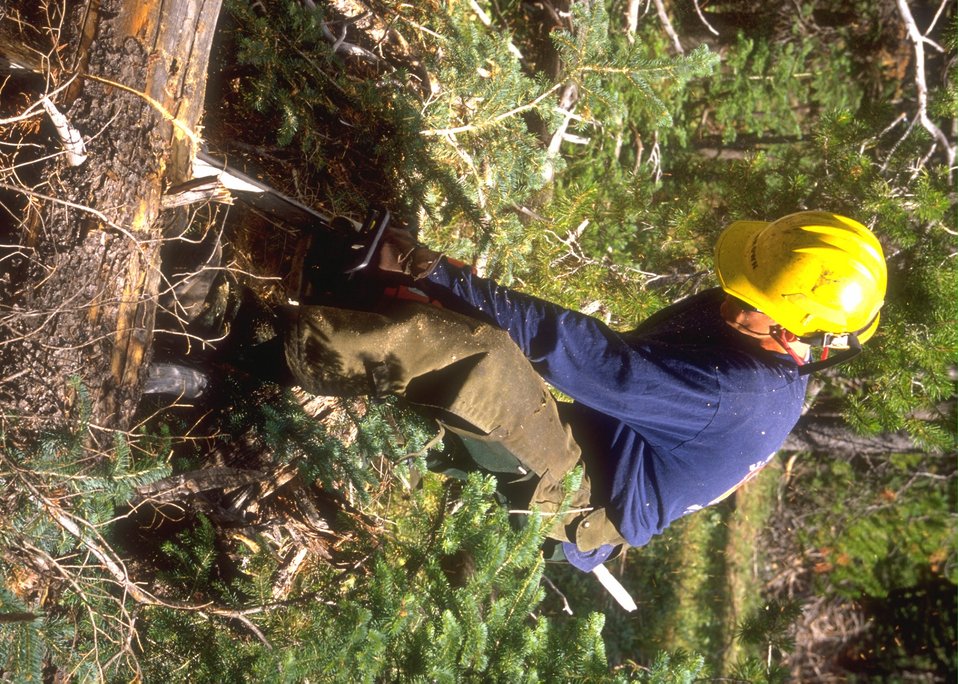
Fuels reduction management in progress at Muddy Mountain Recreation Area, Casper Field Office.